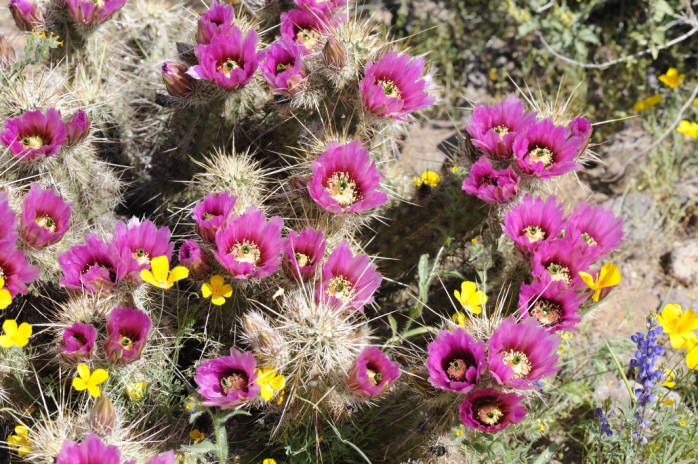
Cabeza Prieta National Wildlife Refuge, AZ

Flowering barrel cacti